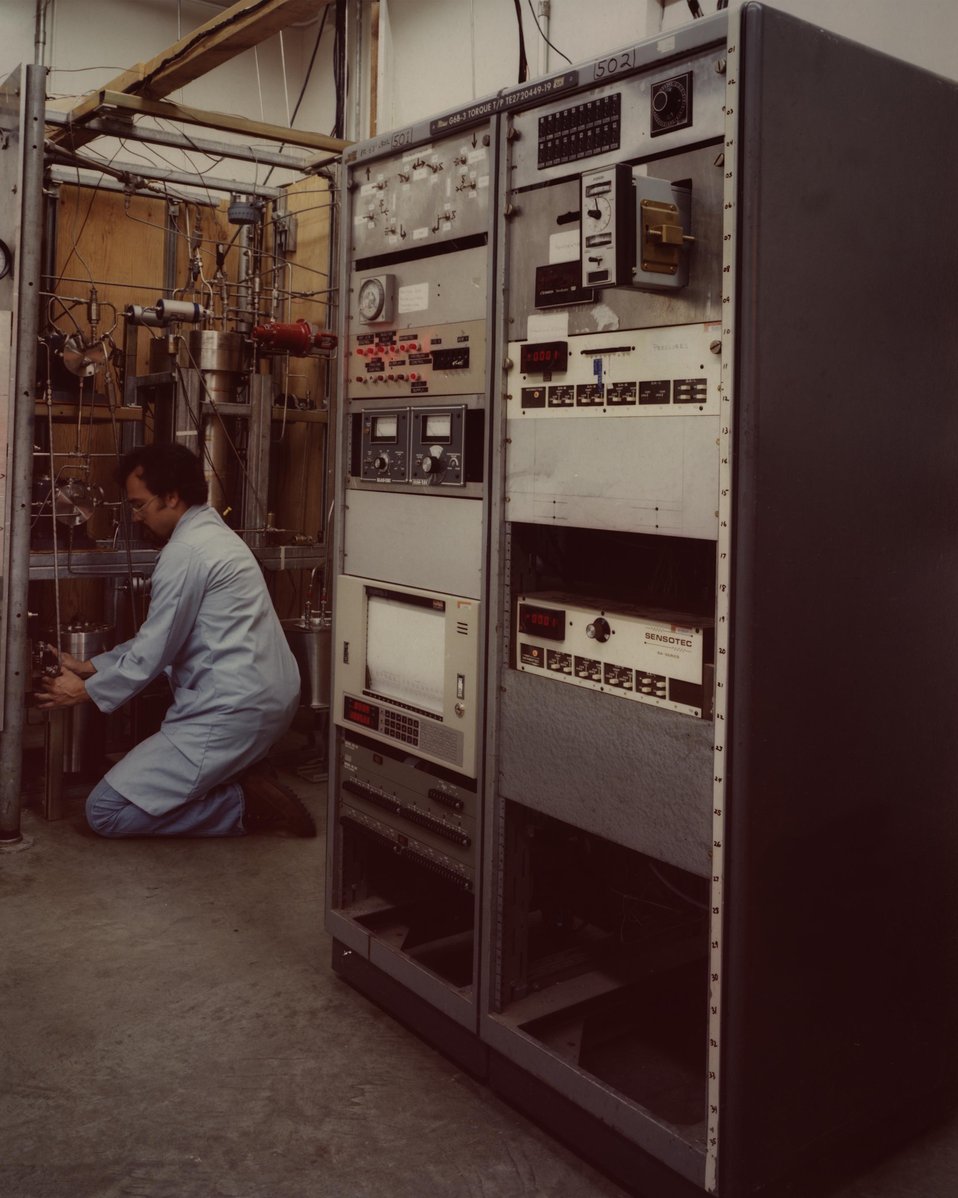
THE CENTRAL REMOTE CONTROL UNIT (FOREGROUND).

THE PROCESS EVALUATION UNIT IS USED TO TEST VARIOUS METHODS OF CONVERTING BIOMASS INTO FUEL OIL. ONE OF THE LIQUEFACTION METHODS INVOLVES REACTING THE BIOMASS WITH CARBON MONOXIDE AND HYDROGEN UNDER HIGH TEMPERATURES AND PRESSURES IN THE PRESENCE OF CATALYSTS.